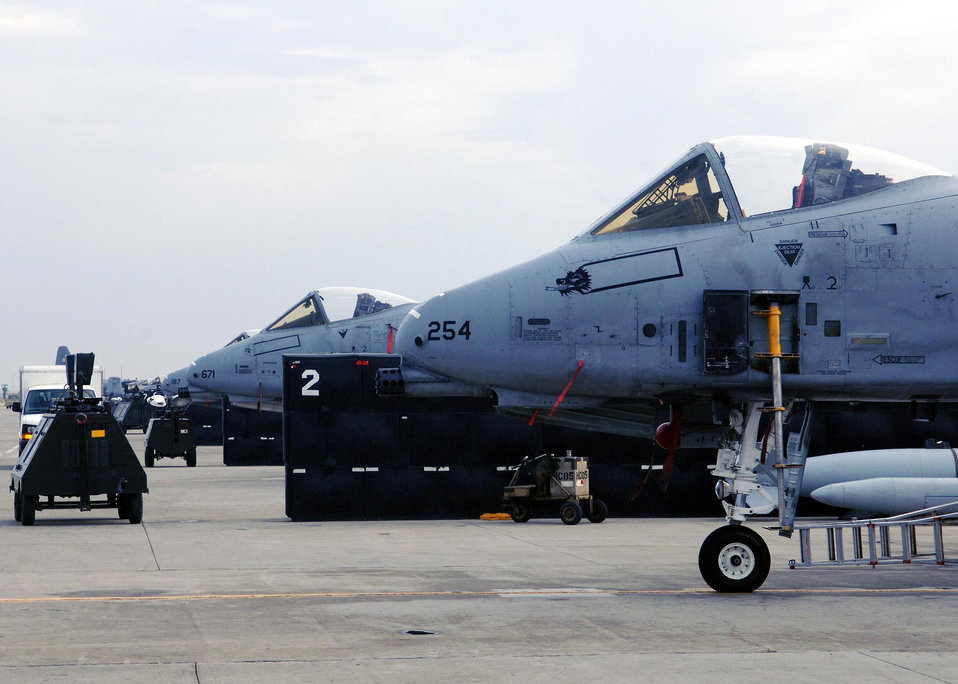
Sept. 2 airpower summary: A-10s provide overwatch for ground forces

Air Force A-10 Thunderbolt IIs assigned to the 354th Expeditionary Fighter Squadron sits ready to launch at Bagram Airfield, Afghanistan. A-10s fly close air support missions for both Operation Enduring and Iraqi Freedom. A-10s provided two shows of force over areas in Iraq and Afghanistan Sept. 2.